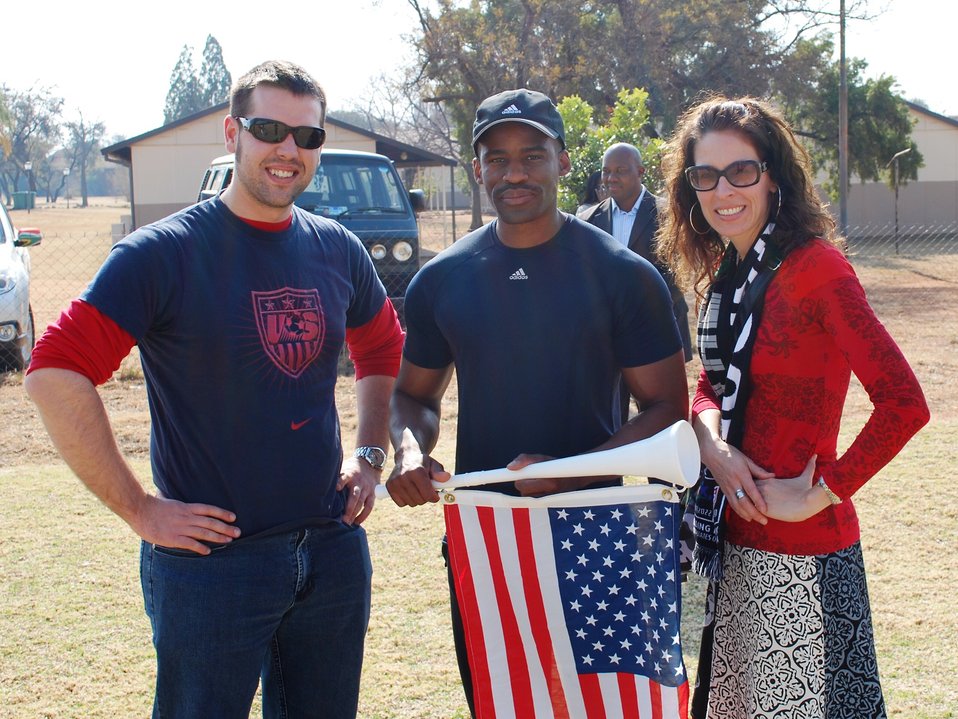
Royal Bafokeng Nation King Kgosi Leruo Tshedkedi Molotlegi Poses for a Photo With Press Attache Hudson-Dean and Fellow U.S. Embassy Staff Member

U.S. Embassy Pretoria Press Attache Sharon Hudson-Dean poses for a photo with King of the Royal Bafokeng Nation, Kgosi Leruo Tshekedi Molotlegi, and a fellow U.S. Embassy Pretoria staff member before two Under-11 Bafokeng Football Academy teams previewed the FIFA 2010 World Cup match between the United States and Ghana by playing each other as the “U.S.” and Ghana” on June 25, 2010, in Rustenburg, South Africa. The game highlighted the development of rural soccer in South Africa, particularly in the Royal Bafokeng Nation, which consists of twenty-nine villages located in the Rustenburg Valley in the North West Province.